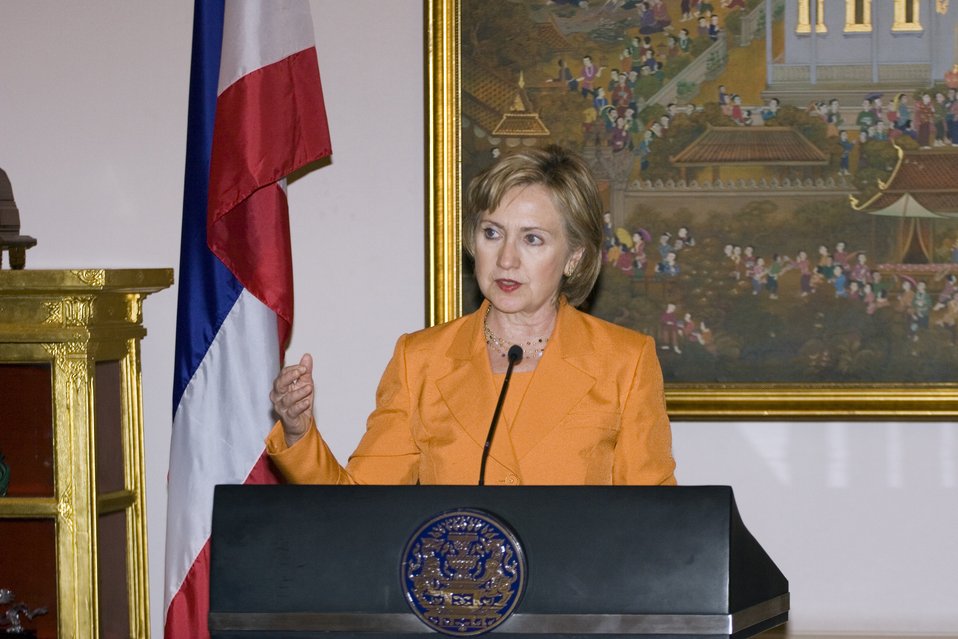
U.S.-Thailand Bilateral Meeting

U.S. Secretary of State Hillary Rodham Clinton answers questions from the press following the bilateral meeting at Government House in Bangkok, Thailand July 21, 2009.